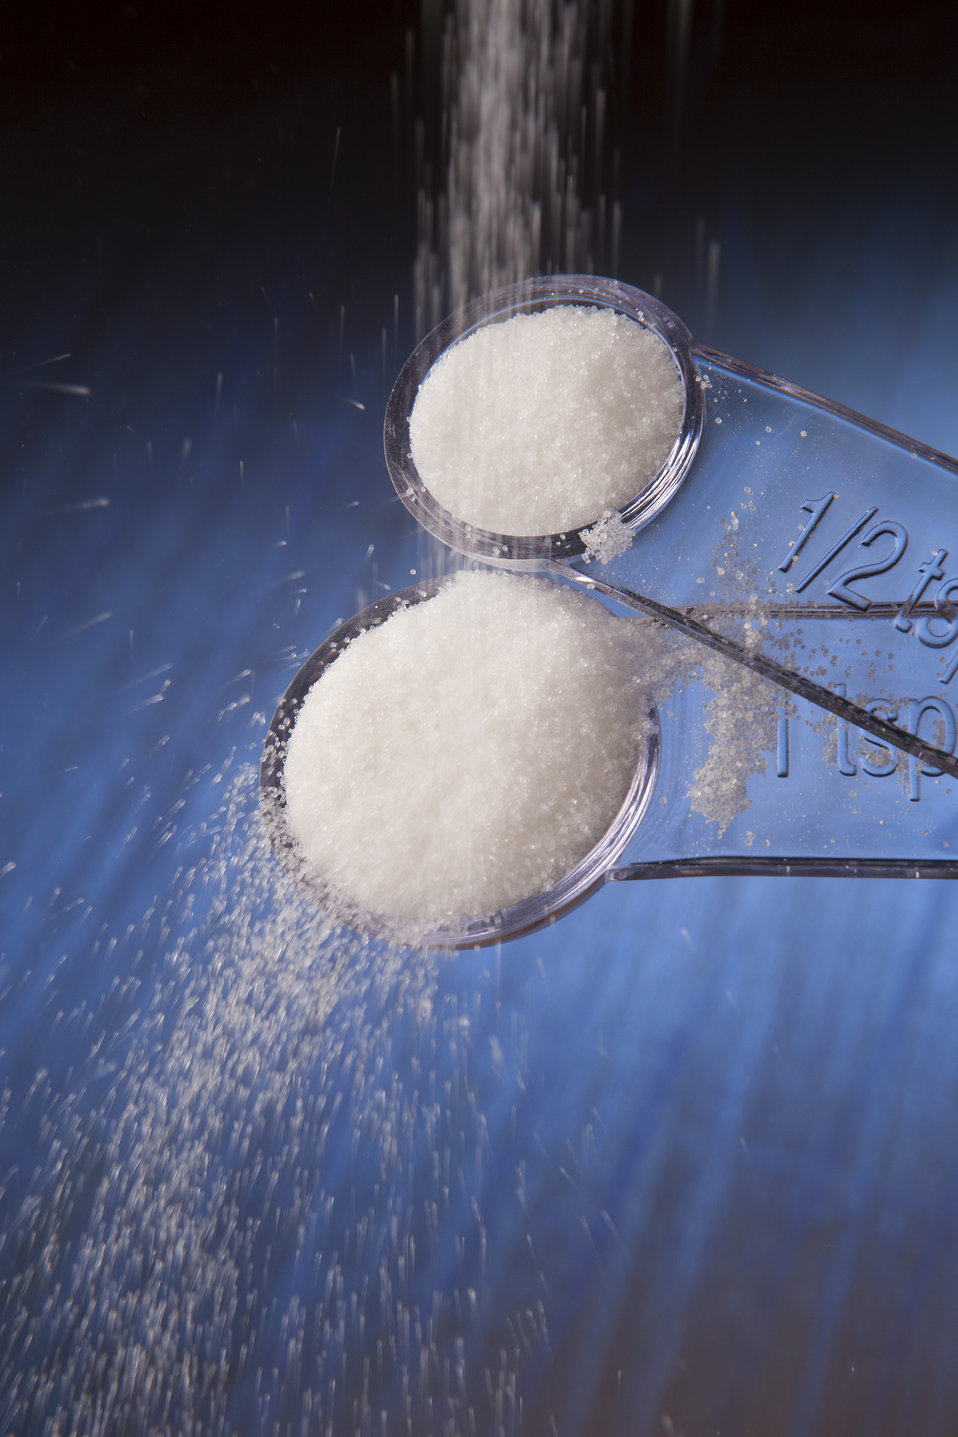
Salt crystals are poured into measuring spoons on May 17, 2003. Survey data shows that people consume the equivalent of more than 1.5 teaspoons of salt, nearly 3,430 milligrams of sodium, each day. Most U.S. adults consume on average more than twice the maximum daily sodium intake recommended.